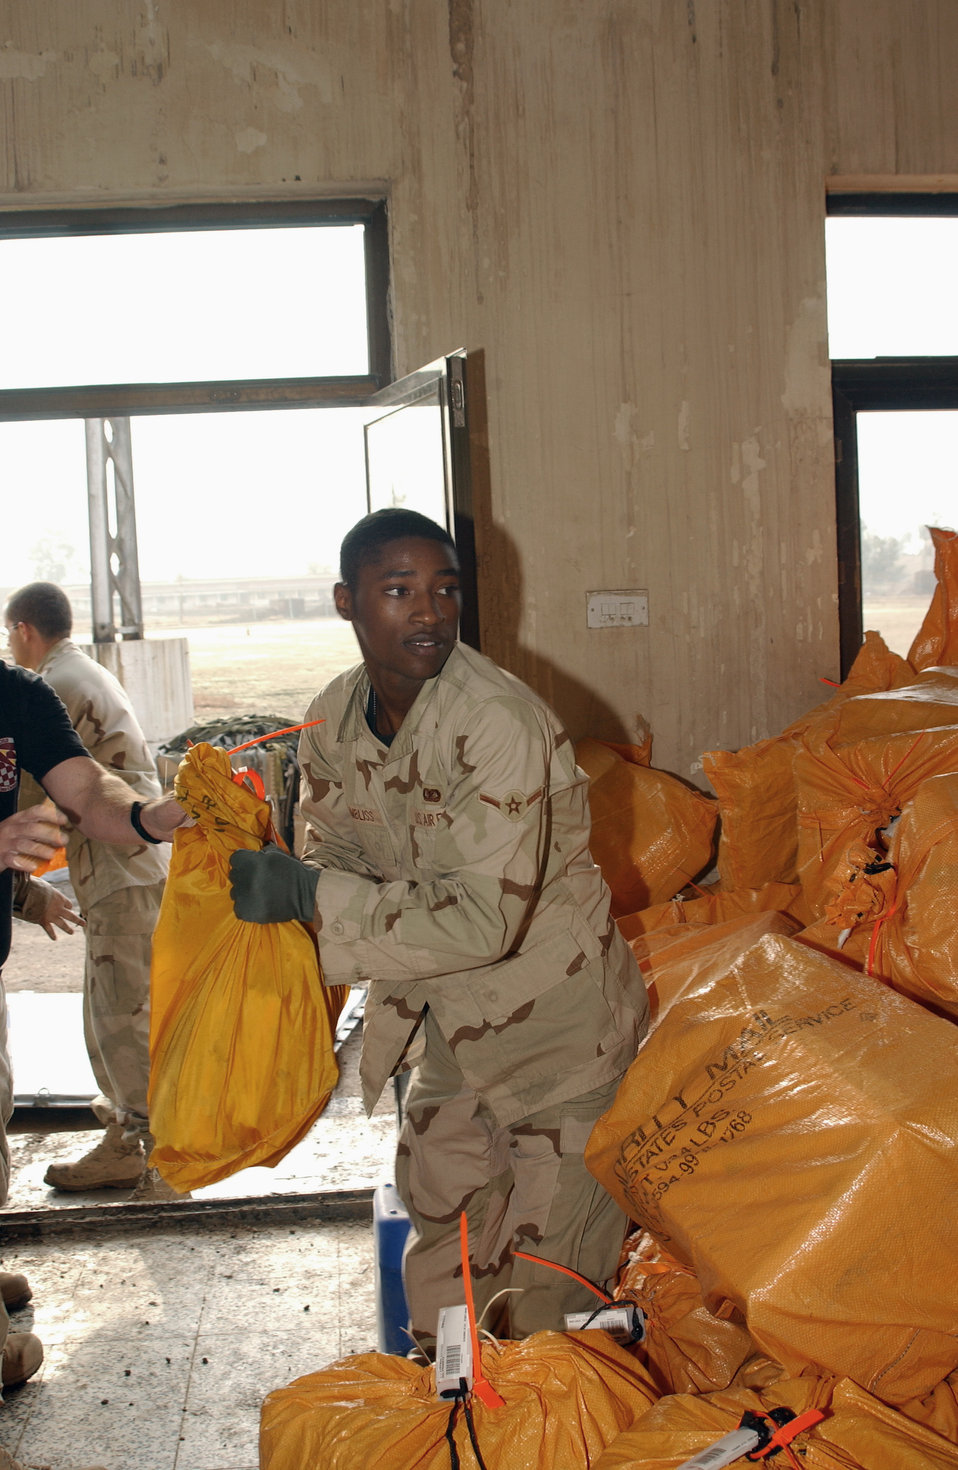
You've got mail!

KIRKUK AIR BASE, Iraq -- Airman Spencer Chambliss carries bags of mail into the postal center here. Postal center workers recently offloaded, sorted and delivered 43,496 pounds of mail. The deadline for sending priority and first-class holiday letters or cards was Dec. 11. Chambliss is assigned to the 354th Expeditionary Fighter Squadron here.